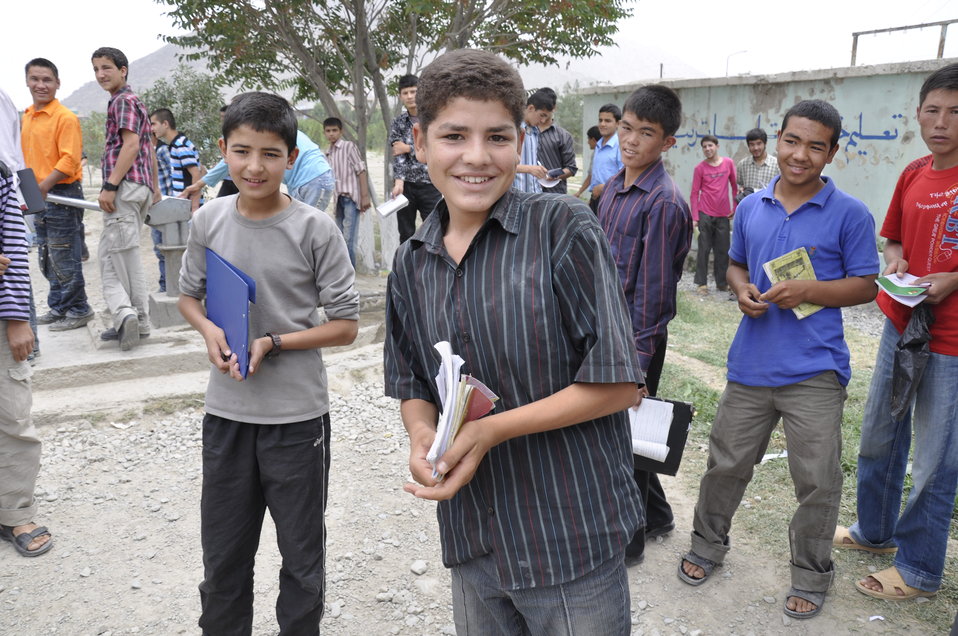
Ghazni High School in Kabul